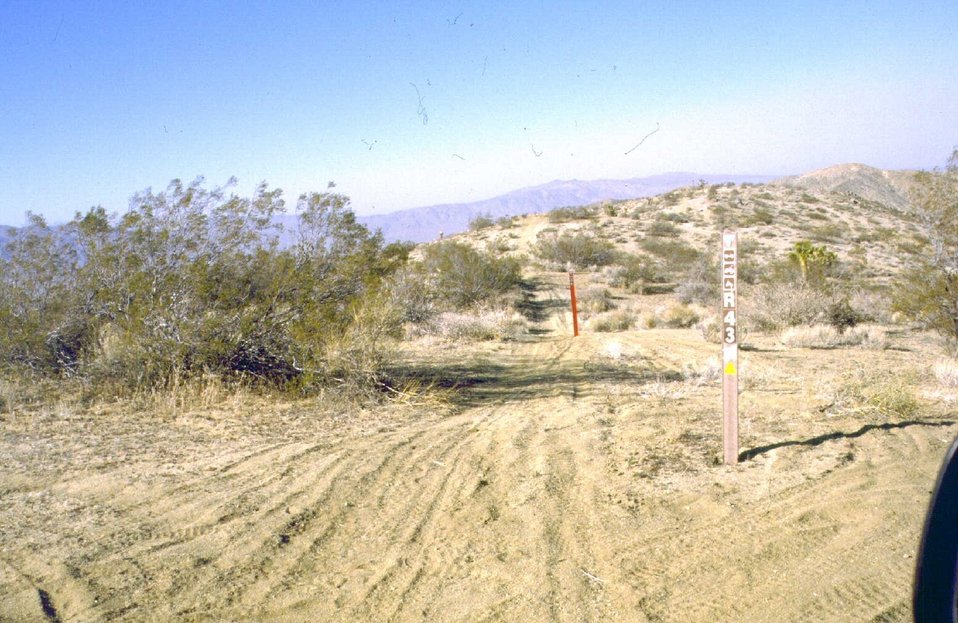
Top R43 7 R48 intersection; active established trespass route ignoring bothe brown designated route sign and red route closed sign.